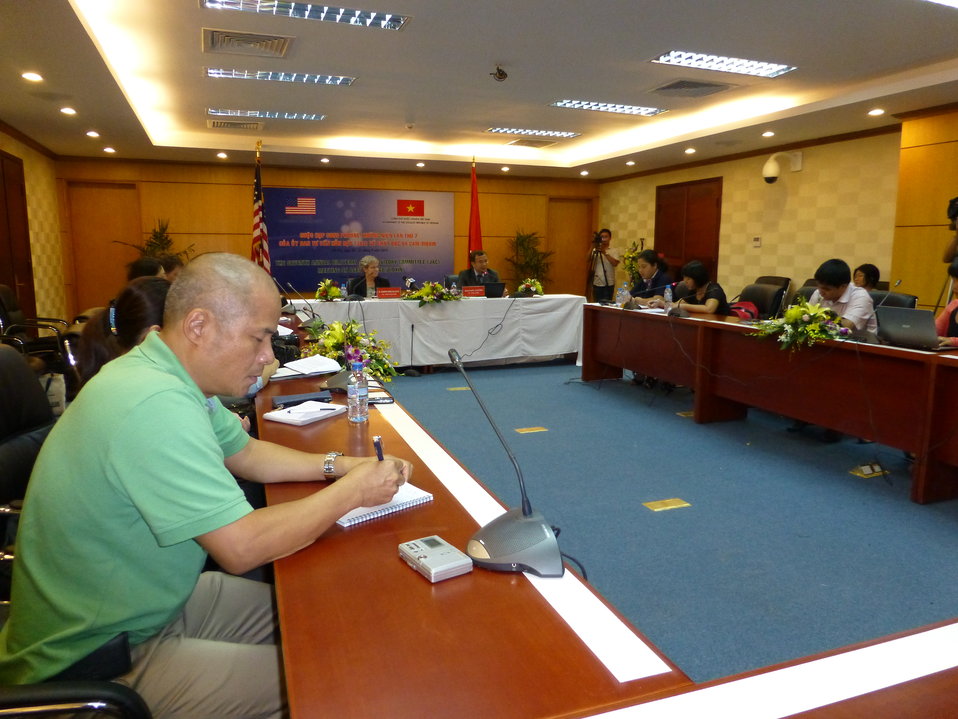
Press Conference at the 7th Joint Advisory Committee Meeting in Hanoi

Hanoi, September 21, 2012